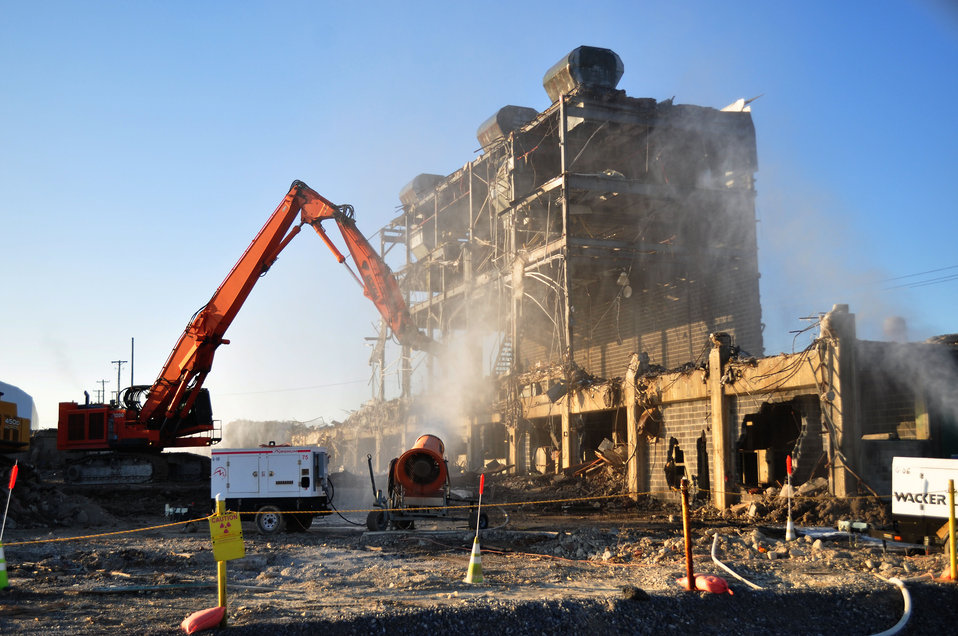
DandD of K-25 North Tower

13-005 DOE photo Lynn Freeny 1-23-2013 ETTP North Tower K-25 Oak Ridge Tennessee